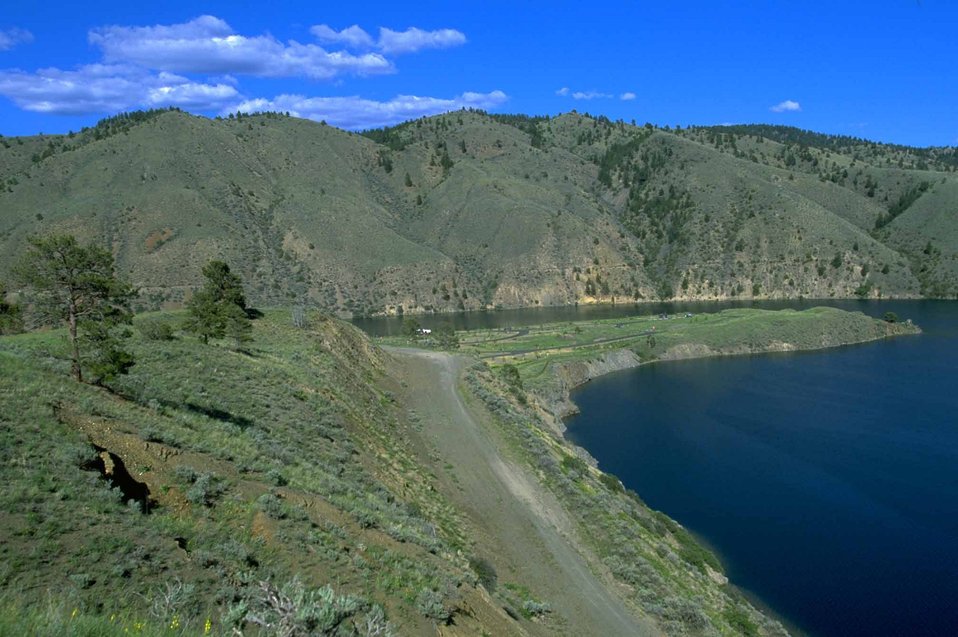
View from the mountain of Devils Elbow Campground